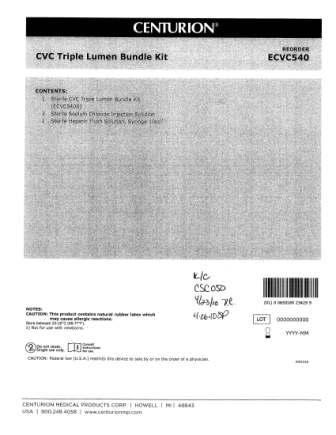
RECALLED - Convenience kits which contain bacteriostatic sodium chloride solution by American Regent

April 1, 2011 - Product Recall - Centurion Medical Products Initiates Voluntary Recall of Customized Convenience Kits (including select Central Venous Catheter, PICC Insertion, and VAD Trays) that contain American Regent’s Bacteriostatic Sodium Chloride Injection, USP, 0.9% 30 mL Multiple Dose Vials.